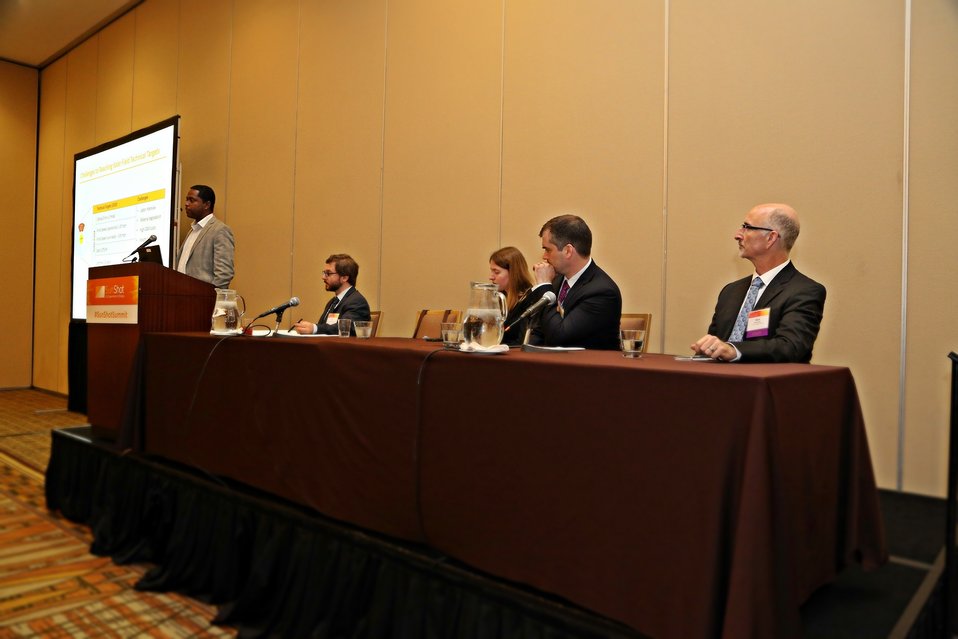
Day 2 Subprogram Overviews 4

SunShot Subprogram Overview panel.